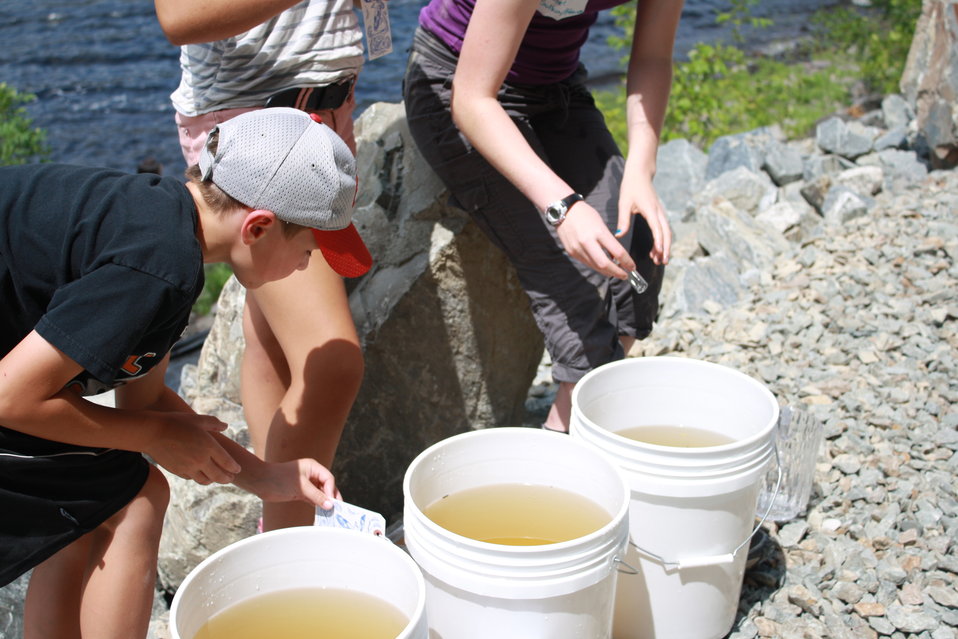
Veazie Dam Removal

Youth gathered water from the Penobscot River and placed it in vials for community members to take and remember the monumental moment.